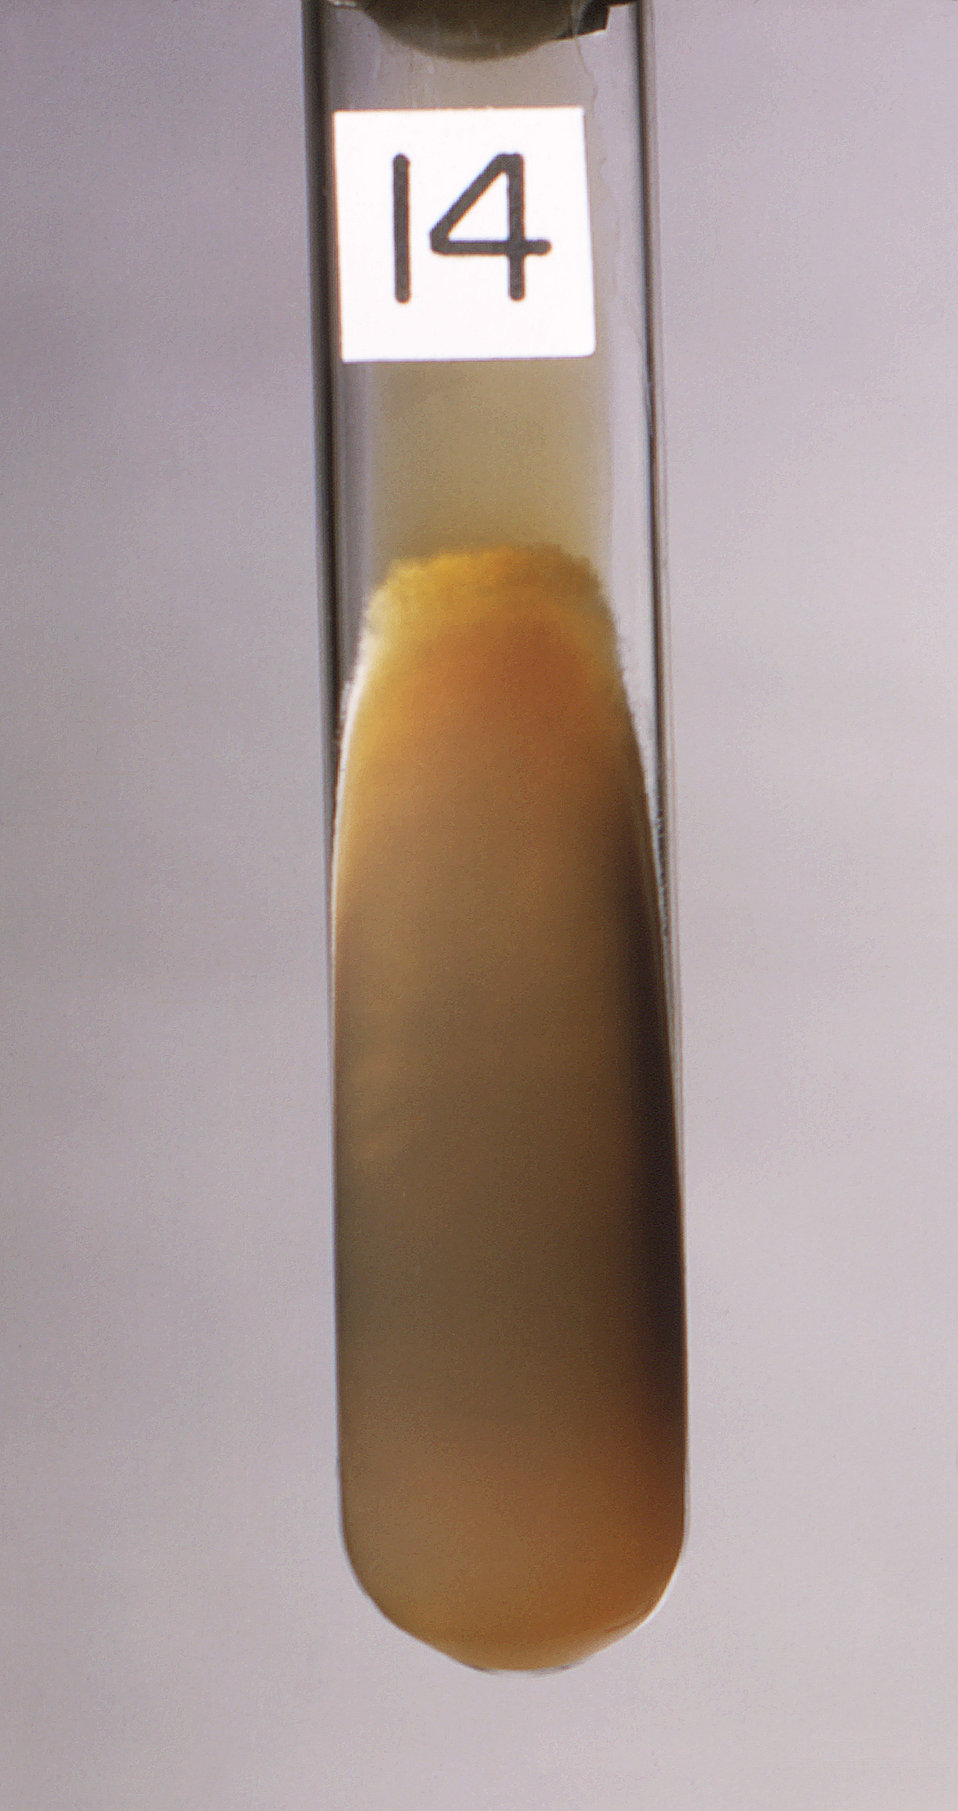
This photograph depicted a slant culture growing Coccidioides immitis fungal organisms on a medium of glucose PhytoneTM, yeast extract, while contained within a 25 X 150mm test tube.